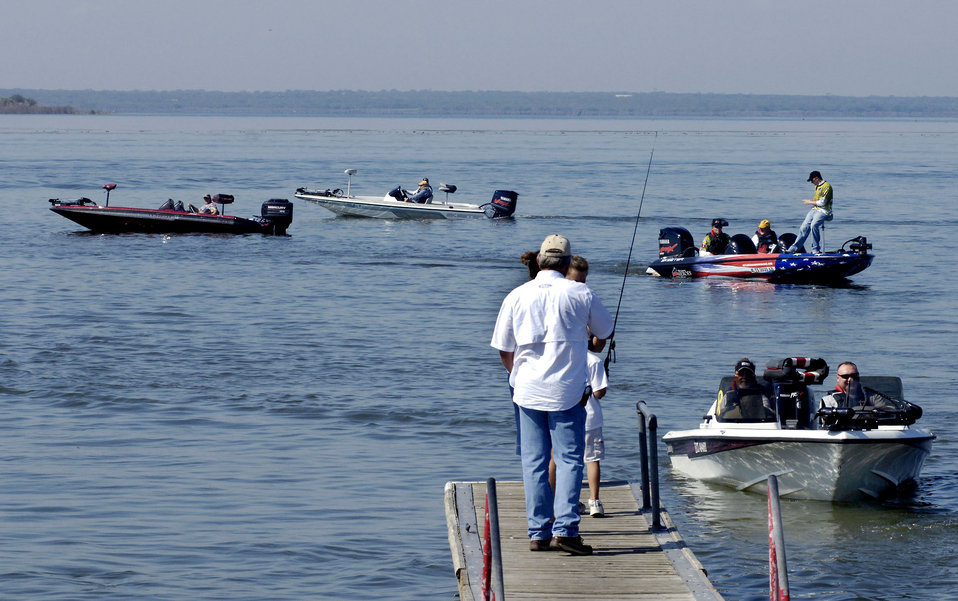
Injured servicemembers get away from hospital to fish

More than 40 boaters volunteered their time, boats and expertise to allow for fishing by injured servicemembers Nov. 3, at Choke Canyon Reservoir, Texas, during the fourth annual Fishing For Freedom event.